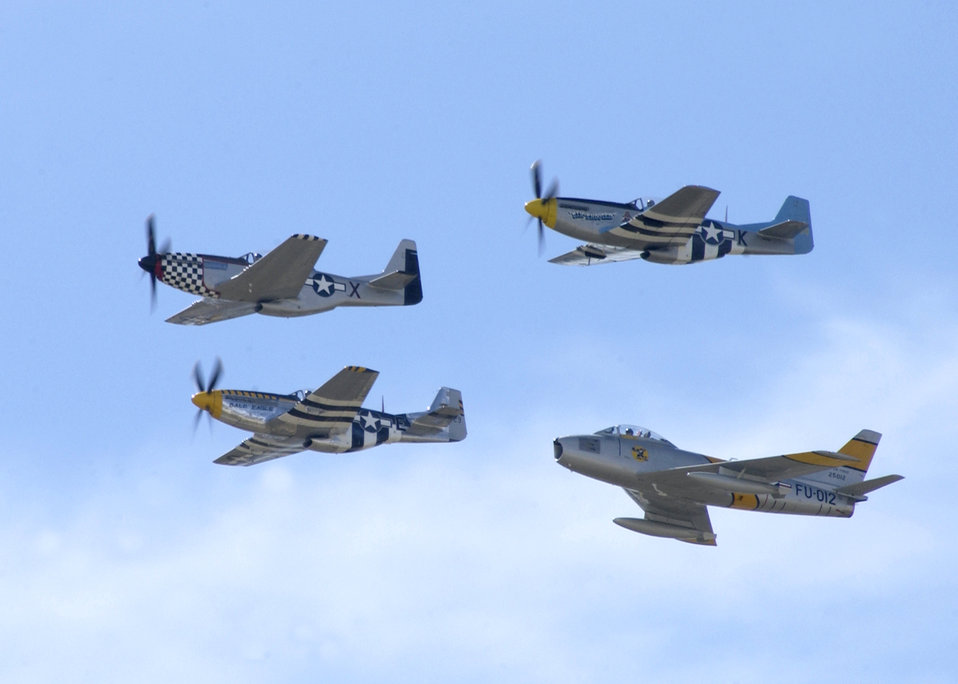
Formation flying

OVER DAVIS-MONTHAN AIR FORCE BASE, Ariz. -- Three P-51 Mustangs and an F-86 Sabre fly in formation here for the 2005 Heritage Flight Conference. The Heritage Flight program was established in 1997 supporting the Air Force's 50th anniversary. It involves today's state-of-the-art fighters flying in close formation with World War II and Korean War vintage fighters. The flight is designed to safely display the evolution of U.S. Air Force airpower and support Air Force's recruiting and retention efforts.